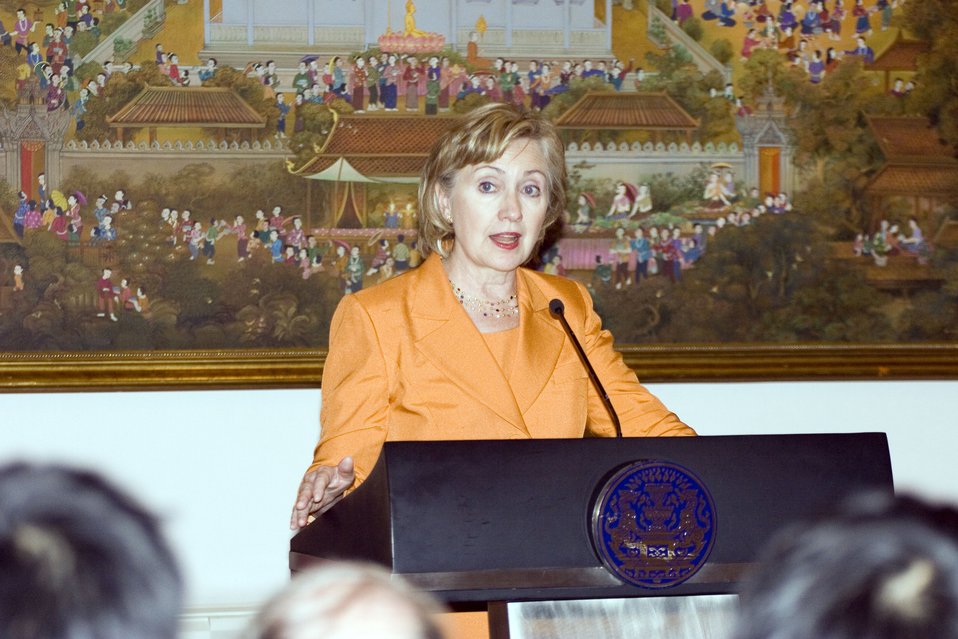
U.S.-Thailand Bilateral Meeting

U.S. Secretary of State Hillary Rodham Clinton answers questions from the press following the bilateral meeting at Government House in Bangkok, Thailand July 21, 2009.